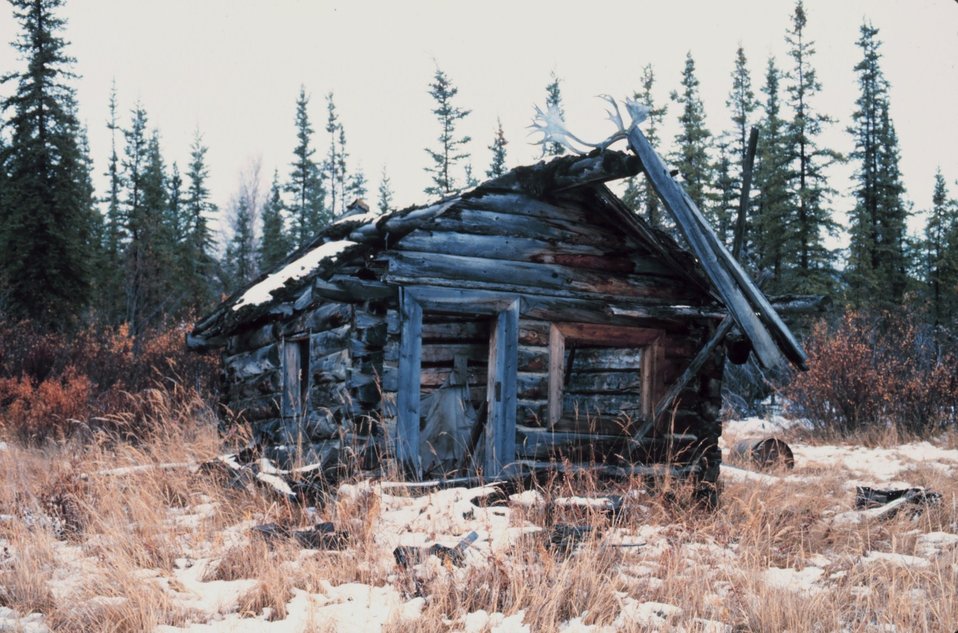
An old settler's cabin.